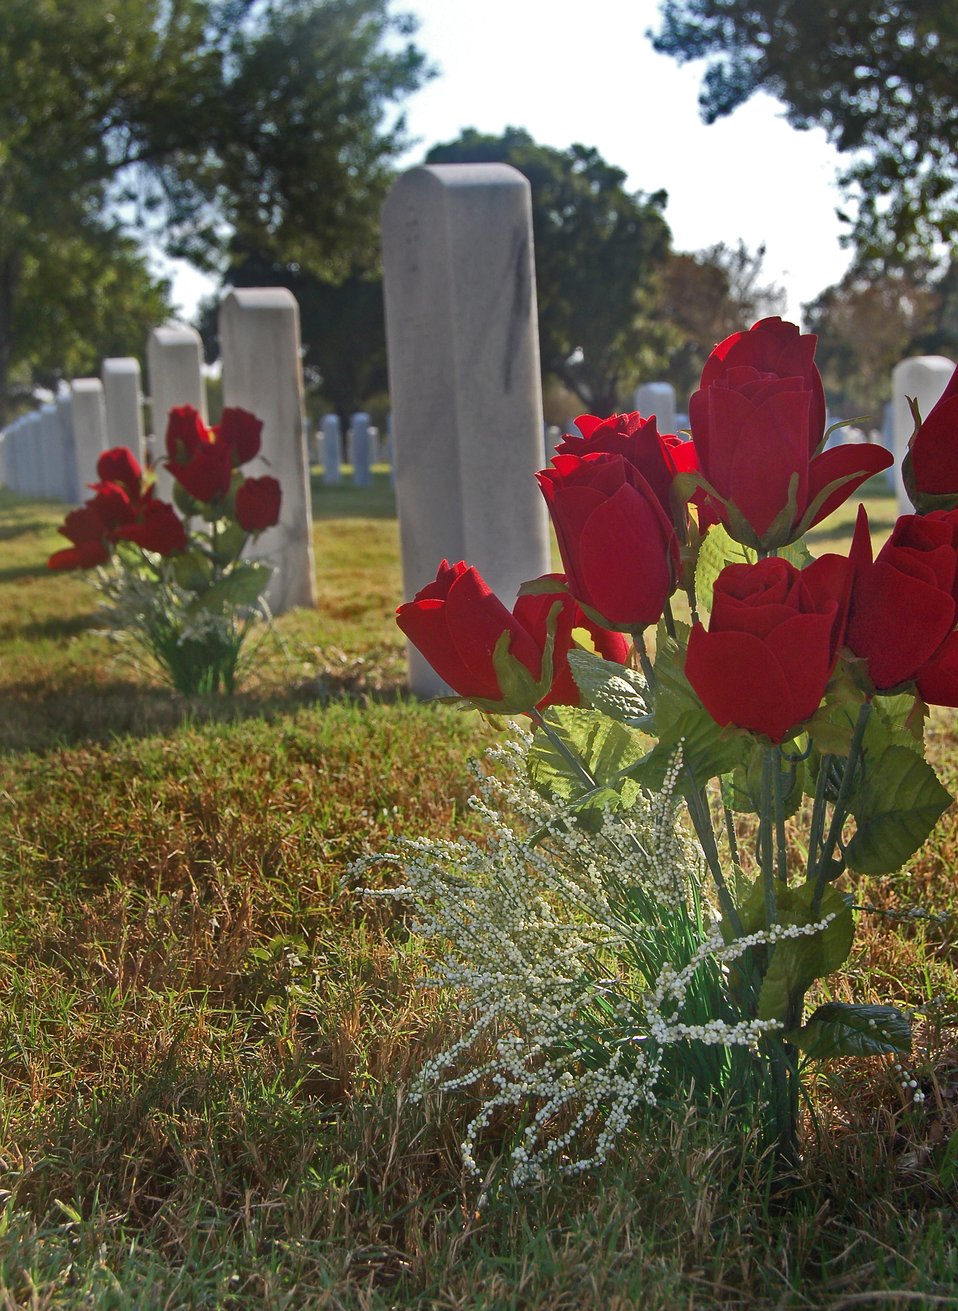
Airmen show respect to fallen servicemembers through community service

Roses adorn a gravesite at the Fort Sam Houston National Cemetery in San Antonio in honor of Veterans Day.